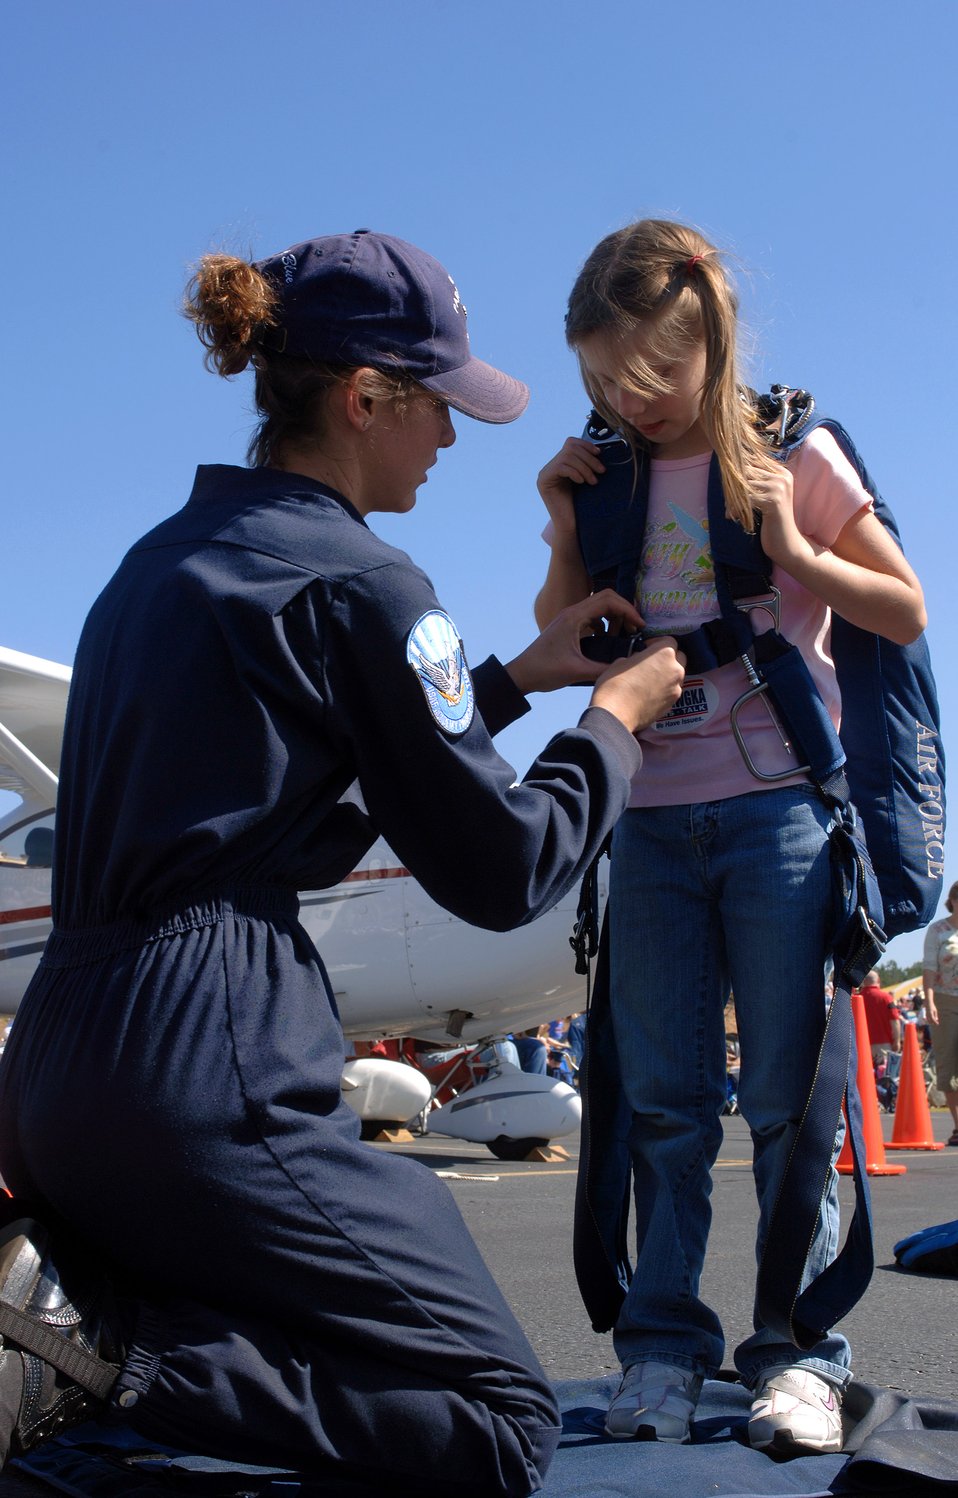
Air Force Week Atlanta wraps up

U.S. Air Force Academy Cadet Alyssa Keeter straps on a parachute onto 9-year-old Hannah Moore of Fayetteville, Ga., during the Great Georgia Air Show Oct. 13 in Peachtree City, Ga. The Academy's Wing's of Blue jump team presentation opened the Great Georgia Air Show culminating Air Force Week Atlanta. Atlanta is one of six cities throughout the country chosen to host an Air Force Week. The theme for the year is